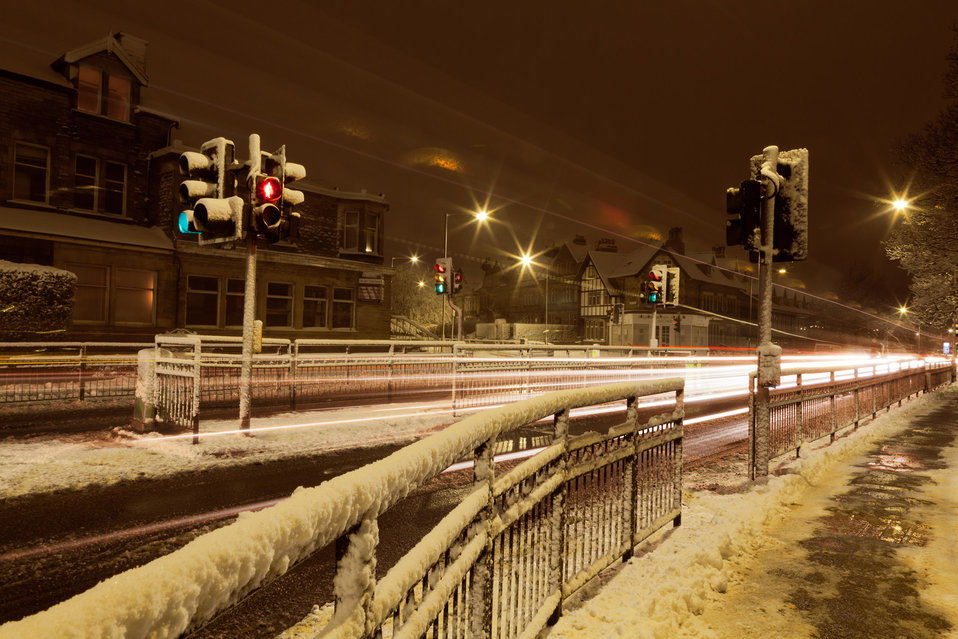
Traffic at night in winter

Traffic light trails at night in winter.